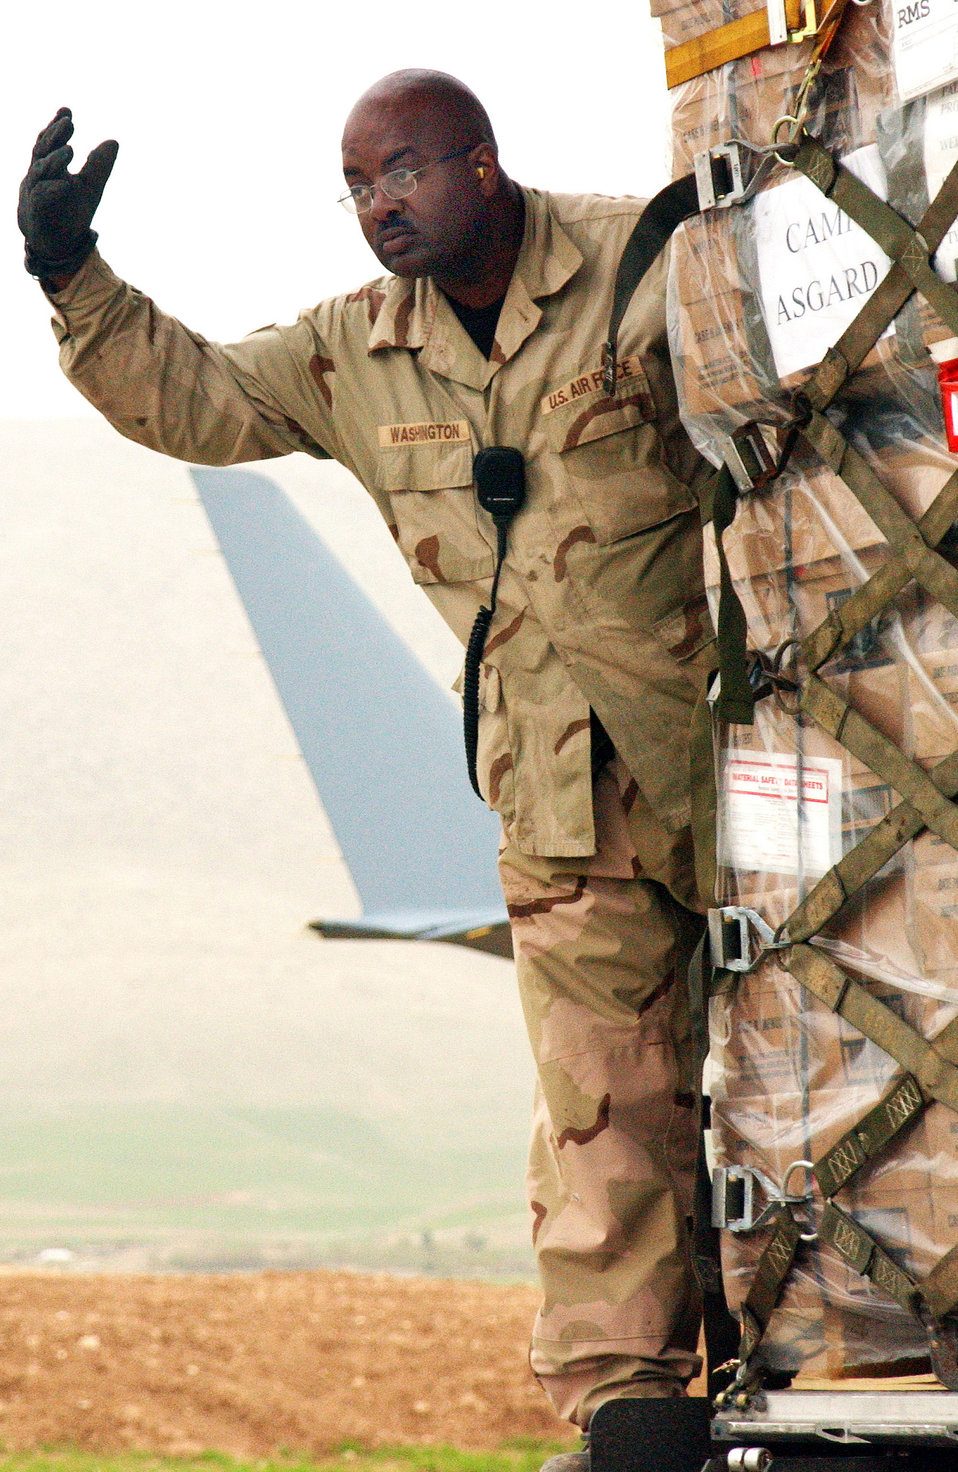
Put it up here

OPERATION IRAQI FREEDOM -- Tech. Sgt. Dennis Washington, 86th Expeditionary Contingency Response Group, signals a forklift operator to approach and unload a C-17 Globemaster III at an air base in northern Iraq. The 86th was one of the first Air Force units that went into northern Iraq.